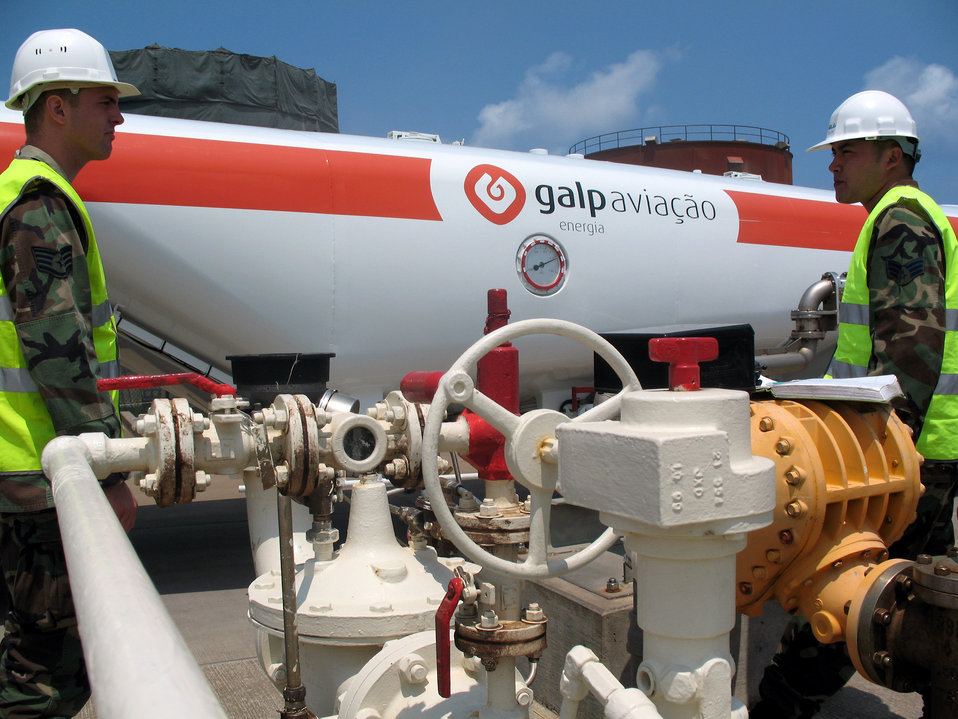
Fuel upgrades improve Lajes Field mission

Staff Sgt. Drew Kilian and Senior Airman Aristotle Munoz pump fuel into a civilian fuel truck June 21 at Lajes Field, Portugal. Ongoing construction at Lajes Field includes an update and expansion to the fuel hydrant system. The project will double the capabilities of the current system. The Airmen are fuels hydrant operators assigned to the 65th Logistics Readiness Squadron.